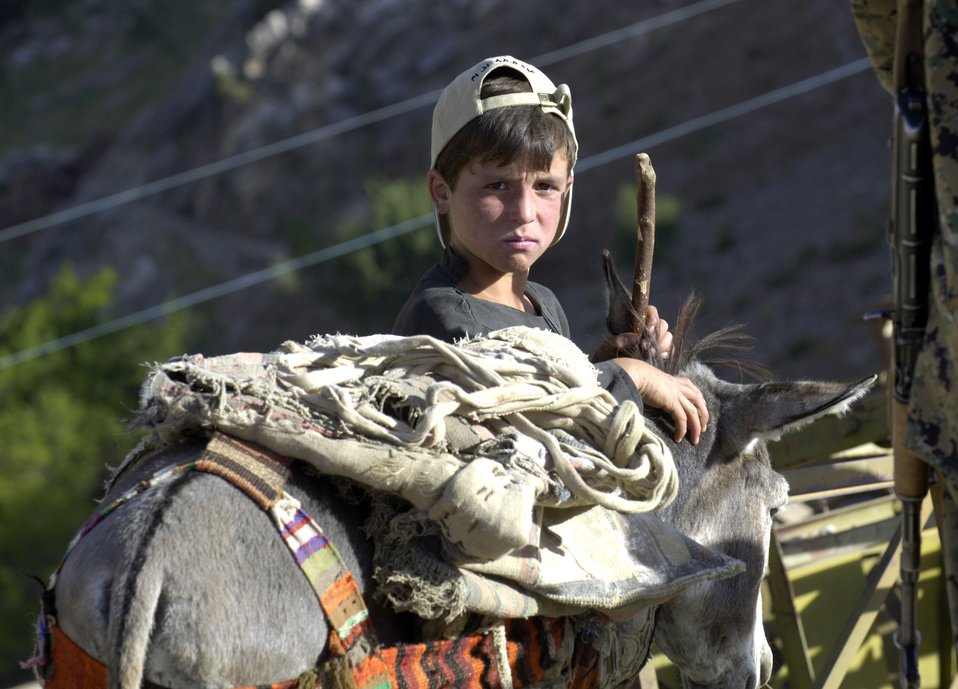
Panjshir PRT

A village boy waits to have his donkey loaded with medical supplies and humanitarian aid by members of the Panjshir Provincial Reconstruction Team Aug. 7. PRT members made an 11-mile round trip trek over a mountain pass and into a river valley to provide medical care to Afghans living in Roydara village in the Shutol district of Panjshir province, Afghanistan.